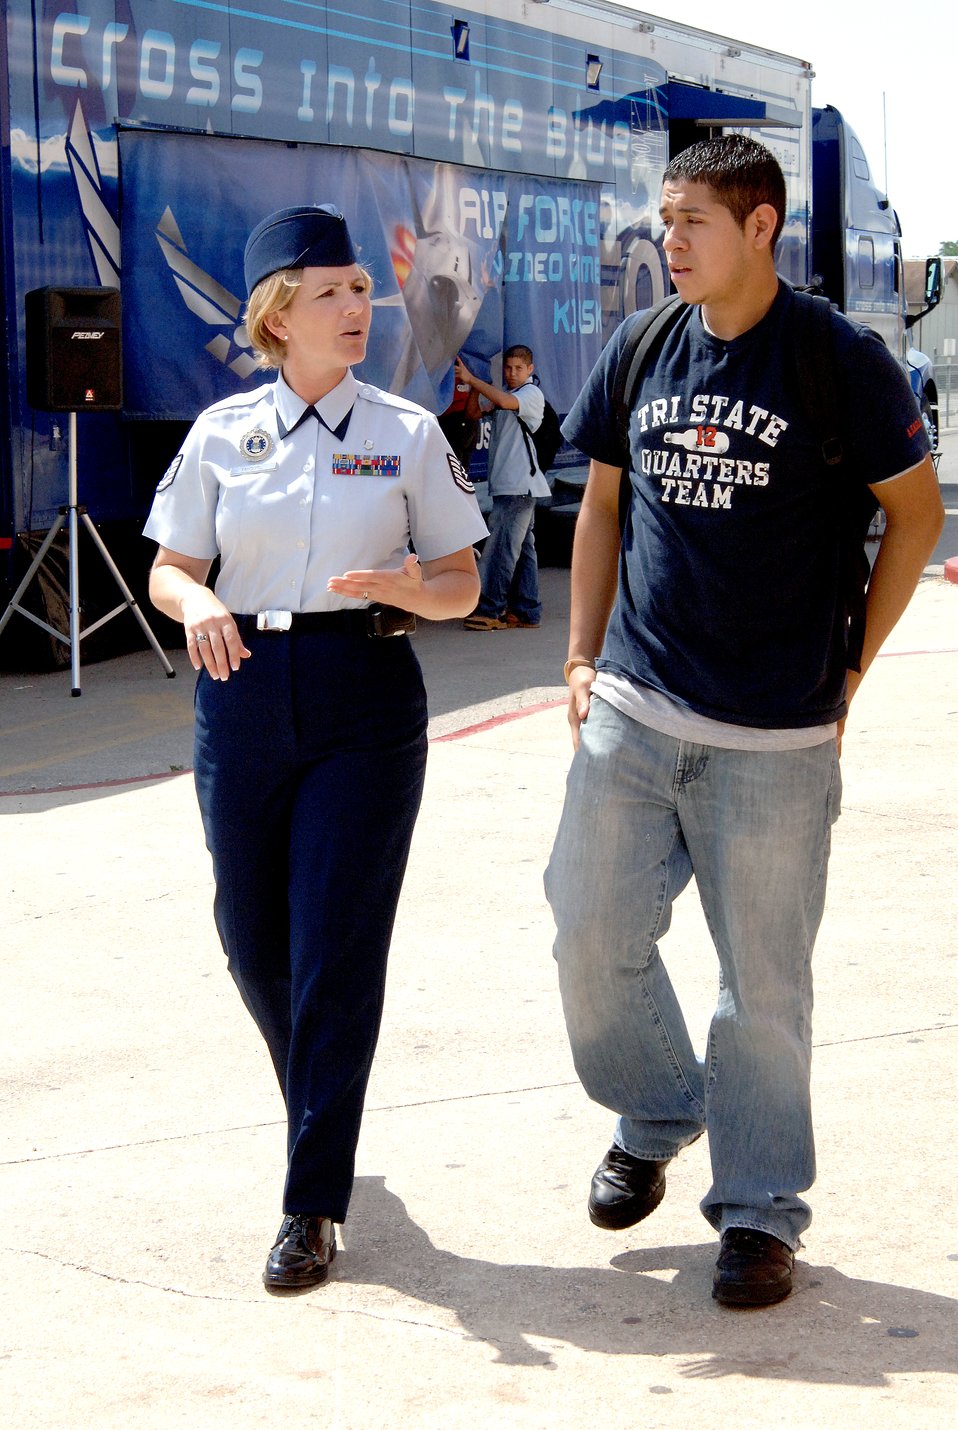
Job opportunities available in recruiting

Tech. Sgt. Kathleen McCool and Stephen Rivera talk about opportunities and careers available at a recruiting event April 4, 2006, at a high school in San Antonio. Mr. Rivera was a senior in high school looking into joining the Air Force after graduation. Sergeant McCool is an Air Force recruiter.